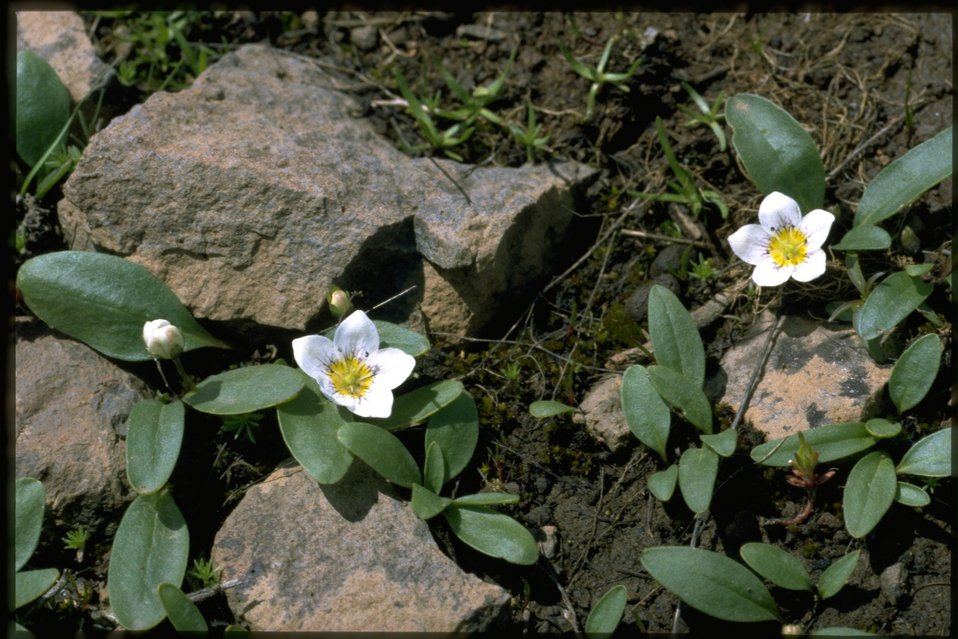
Medium shot of Dwarf Hesperochiron, Hesperochiron pumilus, wildflowers.